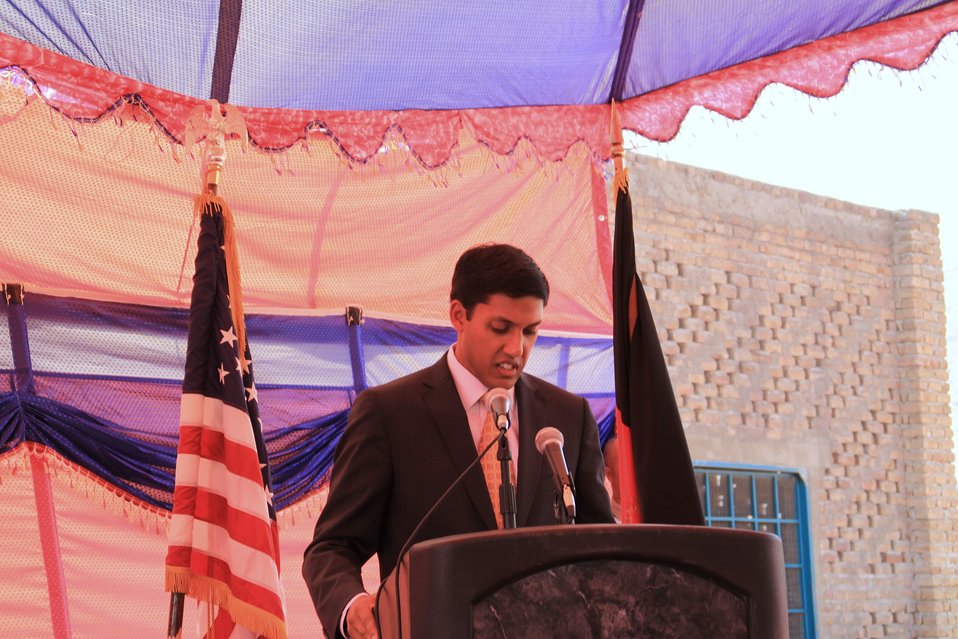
Badam Bagh Farm